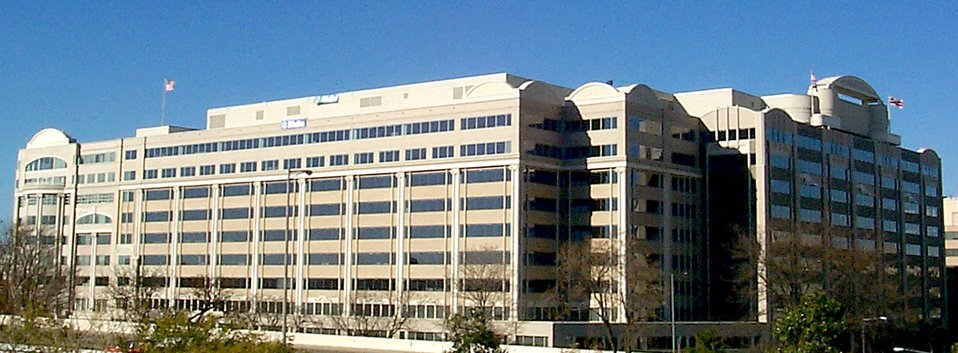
FCC Building